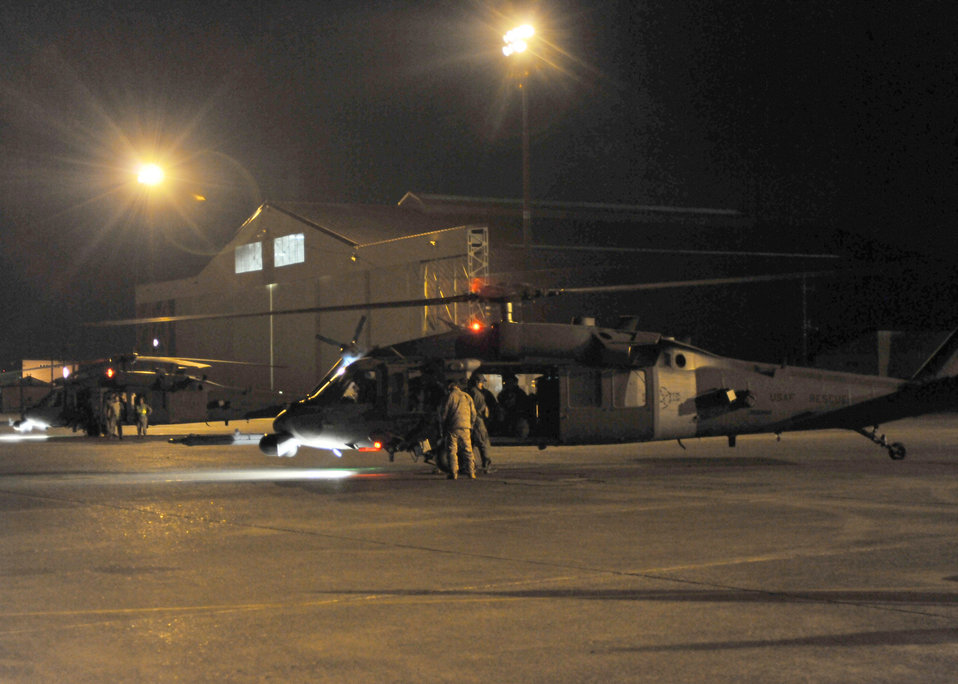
Staging relief

U.S. Air Force HH-60G Pave Hawk helicopters from Kadena Air Base, Japan, arrive at Yokota Air Base, Japan, March 12, 2011, as part of the first wave of American disaster relief forces and aircraft to assist with Japan's earthquake and tsunami recovery effort.